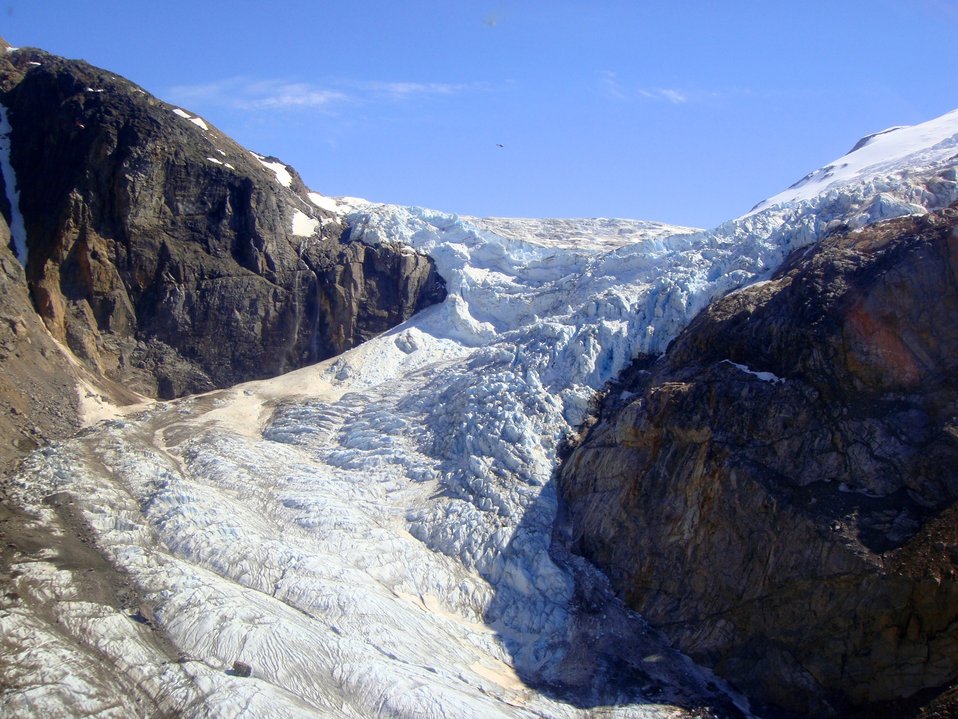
Glacier in alaska.